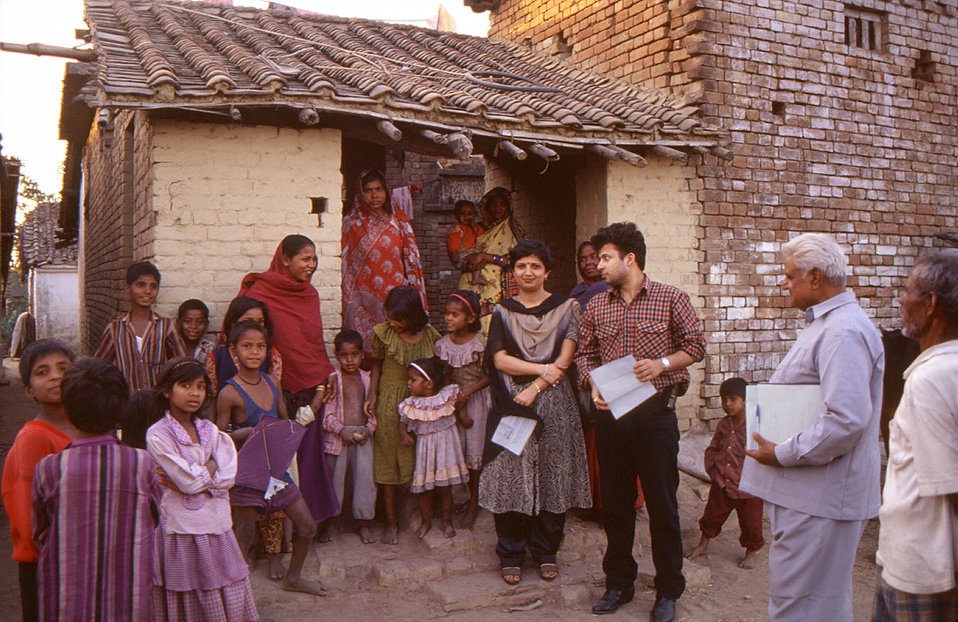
Following each National Immunization Day (NID), a survey of local residents was conducted, in order to determine whether the children in each respective locale had received the recommended doses of polio vaccine, and thereby, assess efficacy of the vaccine dosages. Pictured here, carrying their questionnaires, was medical student Dr. Puja Sharma (left), Mr. Parag Sharma (center), and acting as translator, Dr. G. P. Pandy (right). This was one of a number of images provided by Chris Zahniser, B.S.N., R.N., M.P.H., a STOP Transmission of Polio (STOP) immunization initiative team member and photographer, who was assigned to the state of Uttar Pradesh in northern India, and spent three months working in the Districts of Gorakhpur and Deoria.